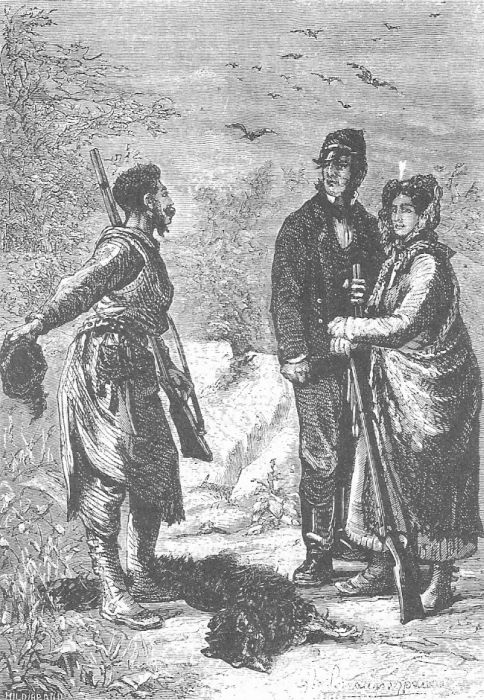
An illustration from Jules Verne's novel 'The Fur Country' (1871-72) drawn by Jules-Descartes Férat or Alfred Quesnay de Beaurepaire. Polski: Ilustracja powieści Juliusza Verne'a 'Wyspa błądząca' (także: 'W krainie białych niedźwiedzi', przekł. dosł.: 'Kraina futer'; 1871-72) autorstwa Julesa-Descartesa Férata lub Alfreda Quesnaya de Beaurepaire'a. Français : Jules Verne: 'Le Pays des fourrures' (1871-72), dessins par Jules-Descartes Férat ou Alfred Quesnay de Beaurepaire. Orginal description from the book: Français : « Les dames aiment les belles fourrures. »